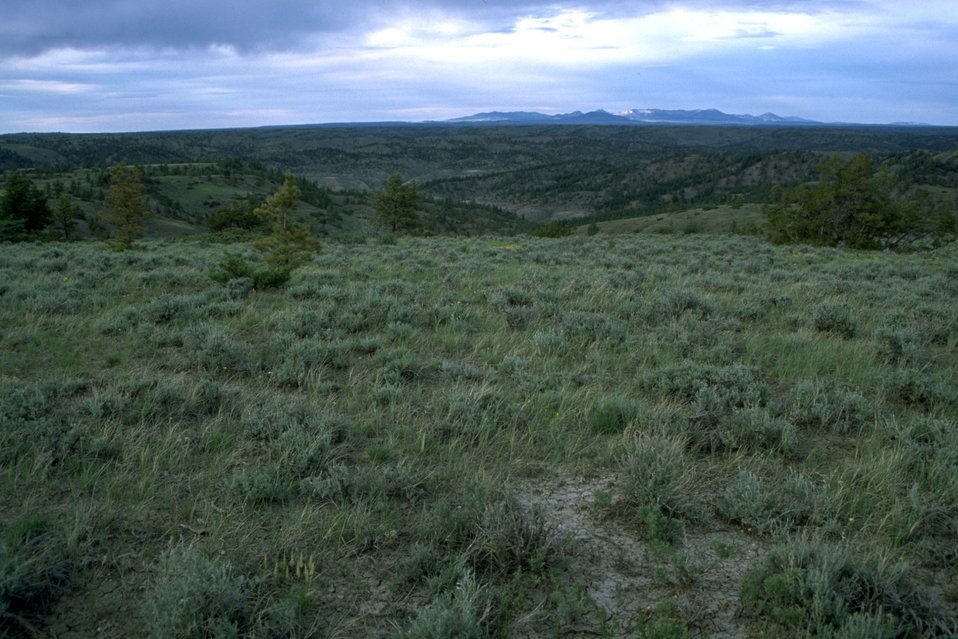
Sagebrush and other vegetation with the Litttle Rocky Mountains in the background